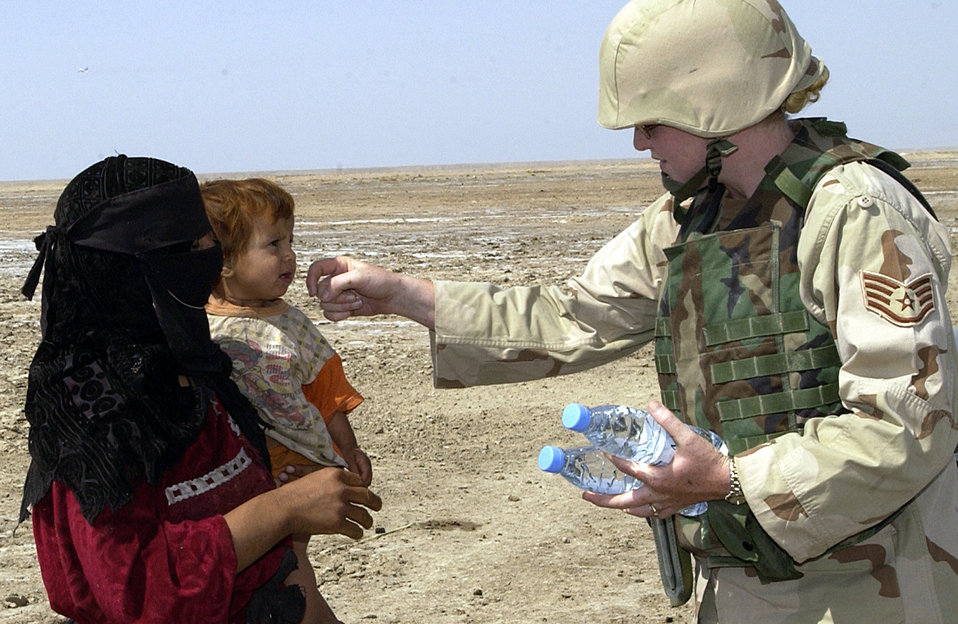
No more tears

TALLIL, Iraq -- Staff Sgt. Tracy Praznik wipes away tears from an Iraqi baby's face as she gives his mother water during a visit here May 7. The visit was supporting Operation Reachout, a program started by security forces Airmen to build a friendship with families living around nearby Tallil Air Base. Airmen visit the families weekly and bring them packaged meals, water and candy. Sergeant Praznik is assigned to the 407th Expeditionary Security Forces Squadron.